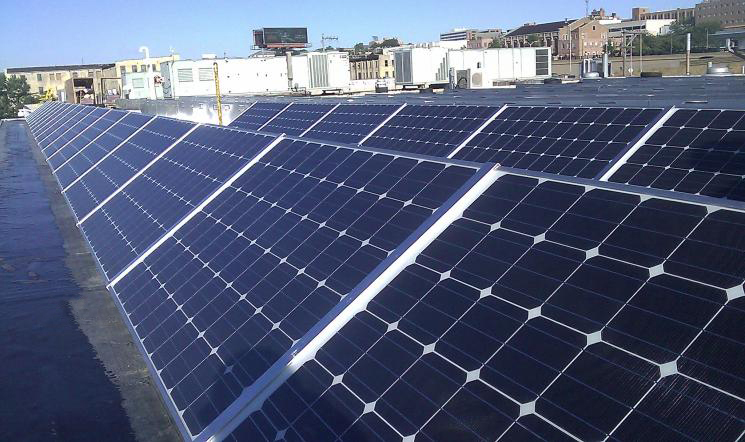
Rooftop PV installation on the Forest County Potawatomi Tribe administration building

February 17, 2012 - Rooftop PV installation on the Forest County Potawatomi Tribe administration building in Milwaukee, Wisconsin.